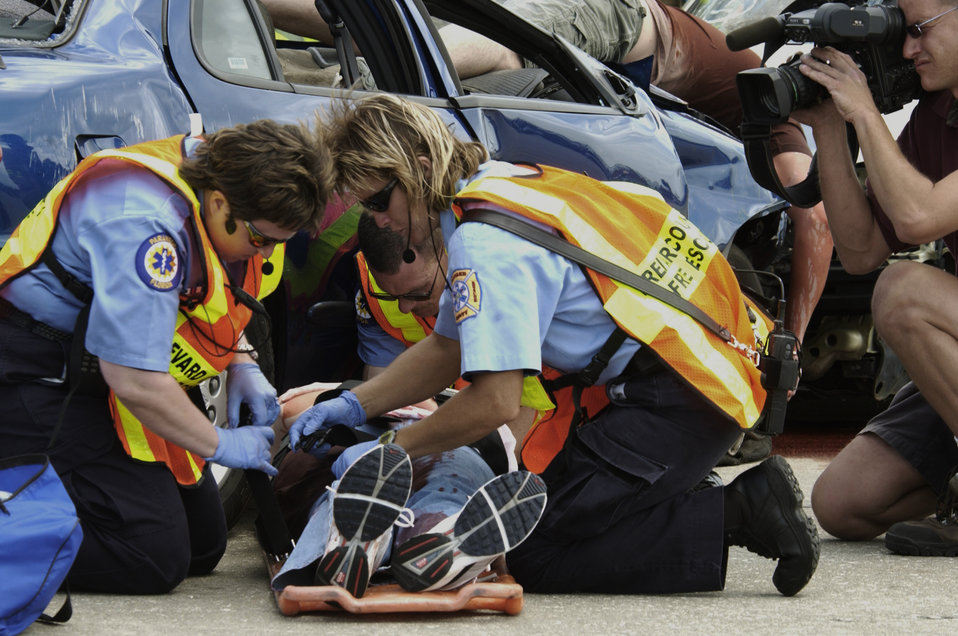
'Not on Our Watch'

A reporter captures a shot of the rescue team from Brevard County, Fla., as they prepare an